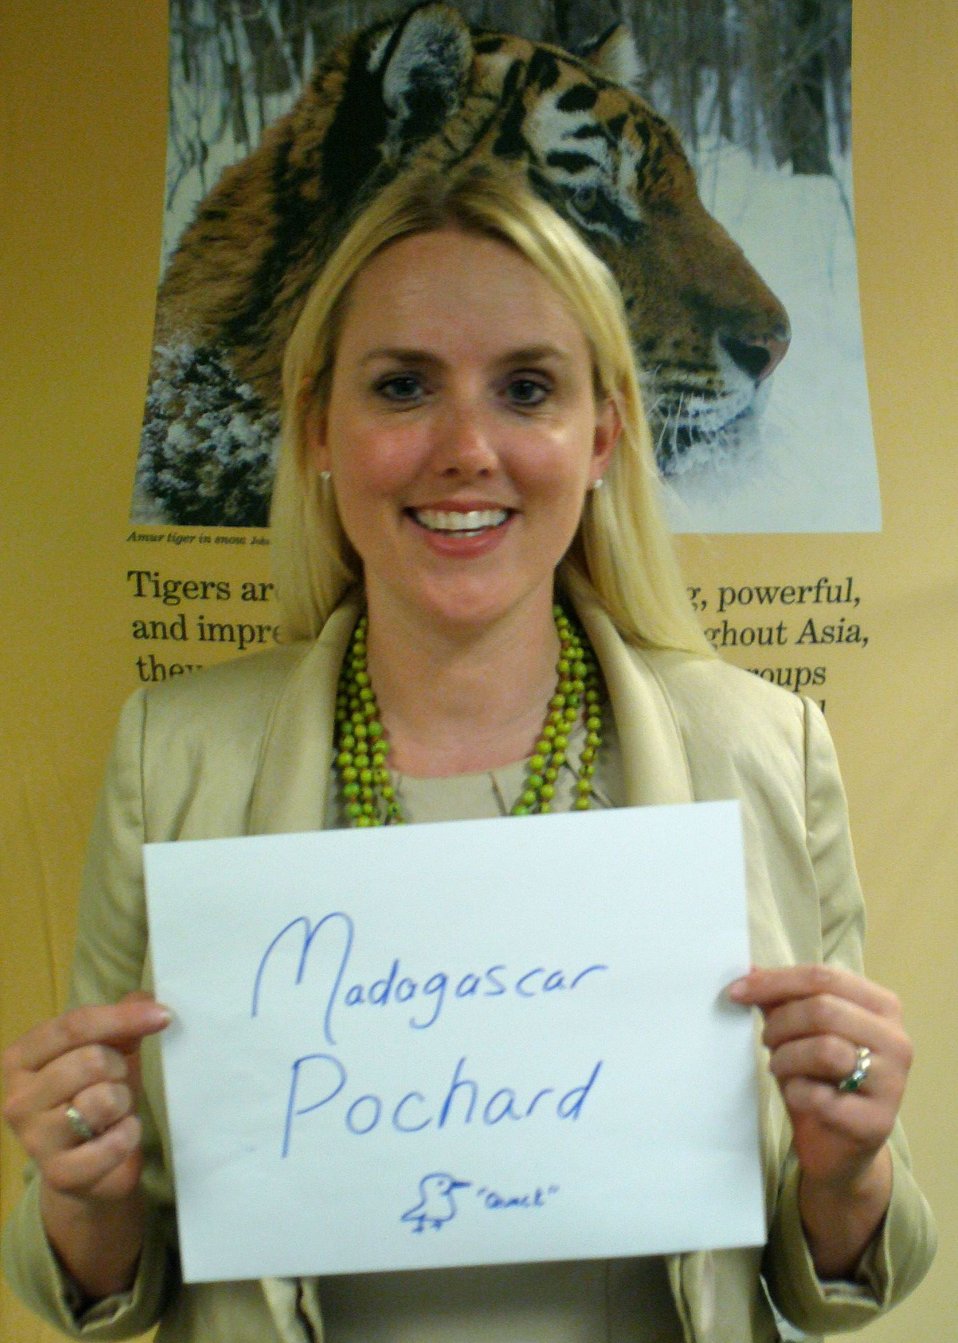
Tracy O'Toole, 'Madagascar Pochard,'

International Affairs participates in FFI's In Our Hands campaign